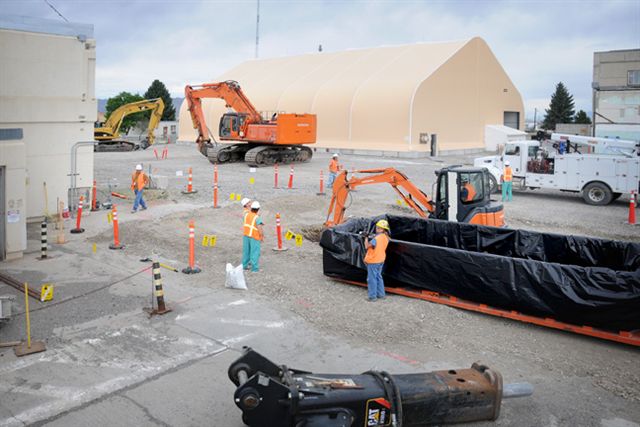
RAN DD RTC S73 TRA-632 EXCAVATION 072610 P6555-20 A